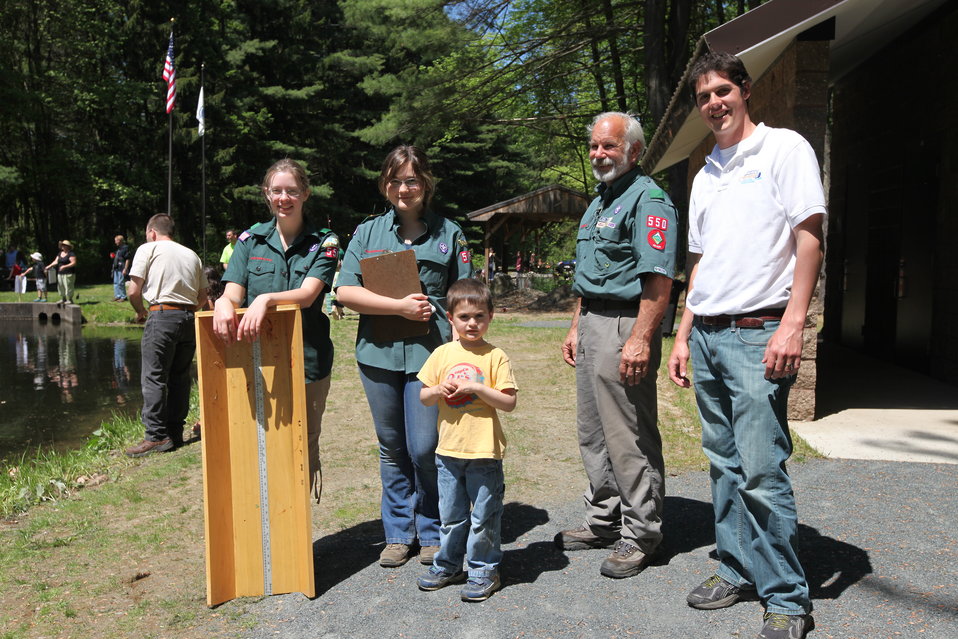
Youth Fishing Derby 2012

Megan Nagel/USFWS